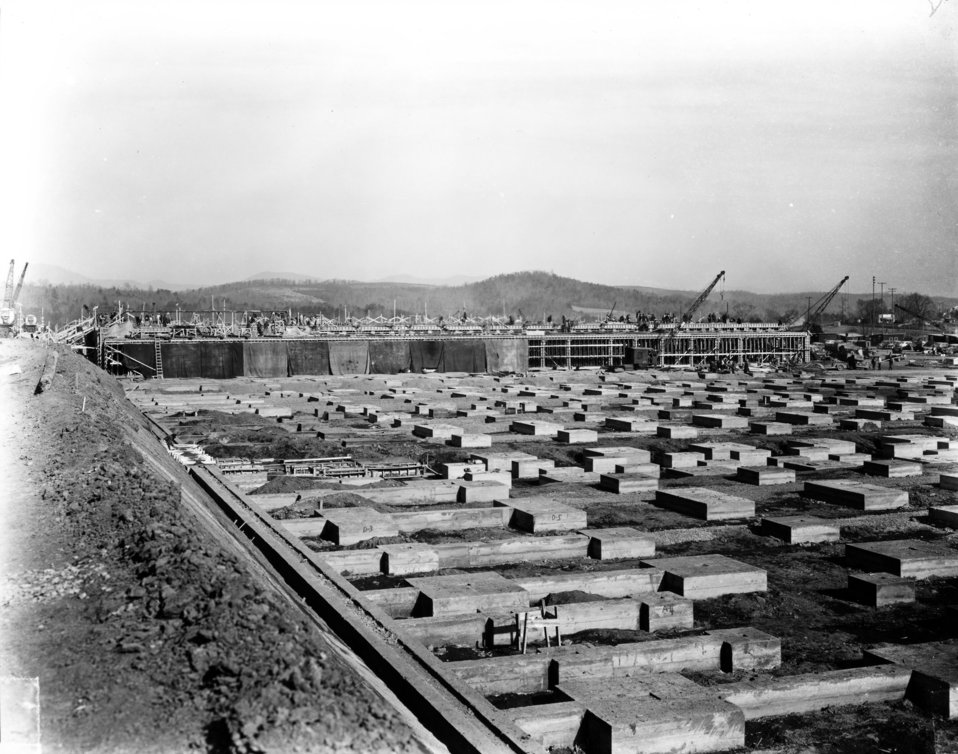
K-25 at Oak Ridge